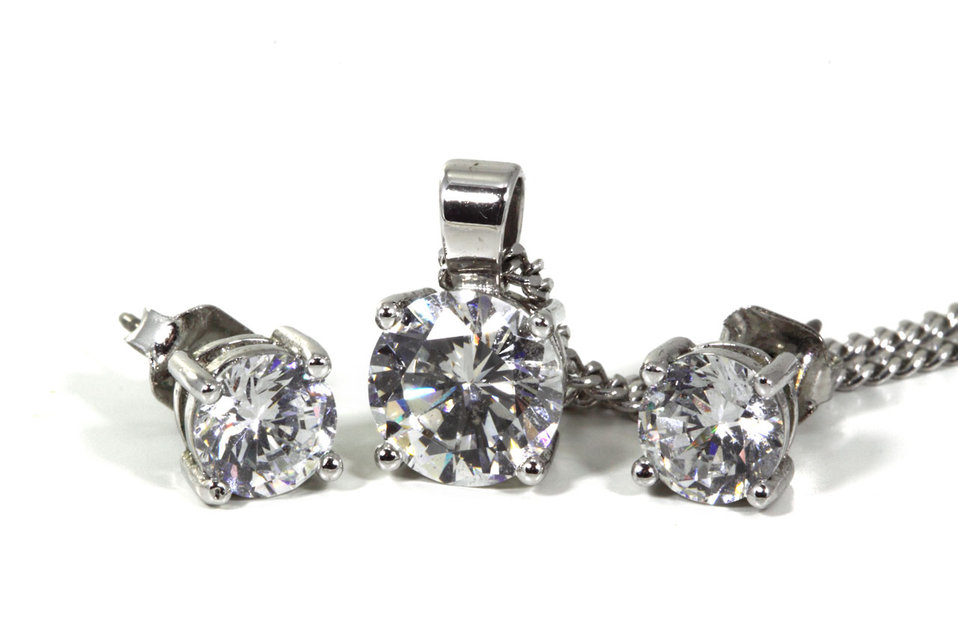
Jewellery

Silver earrings and a necklace.